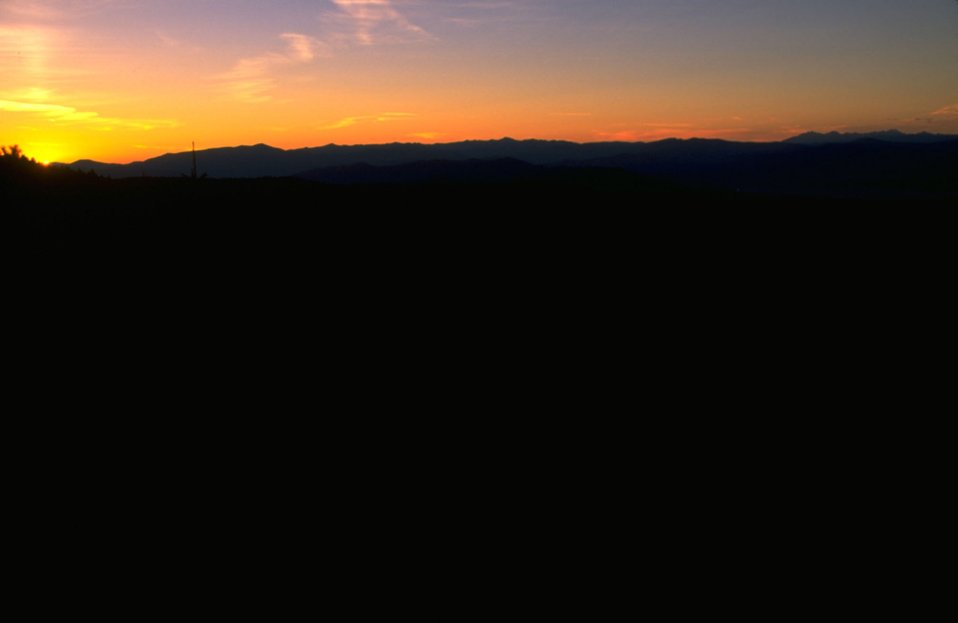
Garnet Back Country Byway -- view at sunrise